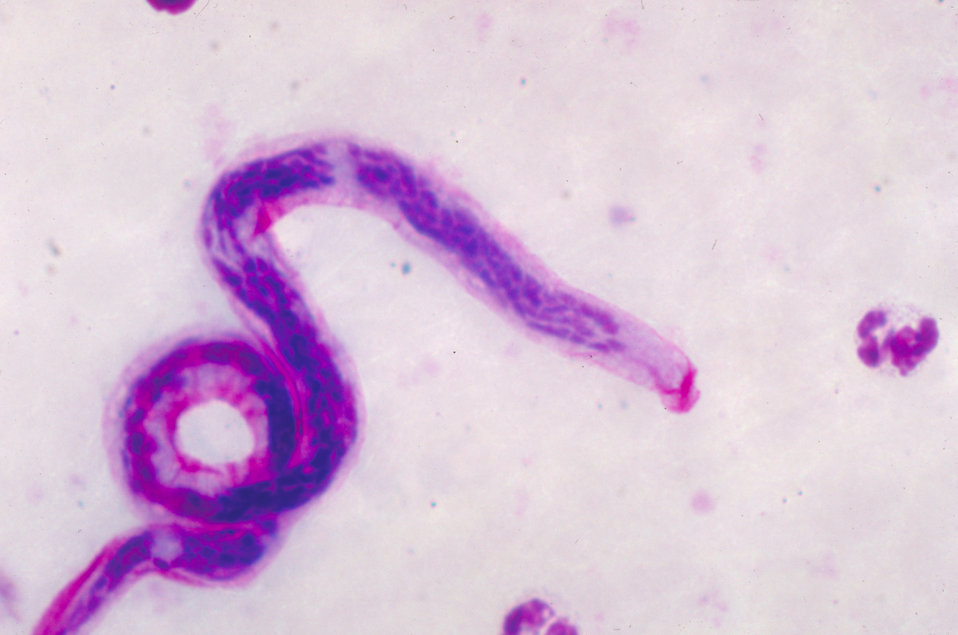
This is a micrograph of the anterior end of a Brugia malayi microfilaria in a thick blood smear using Giemsa stain.